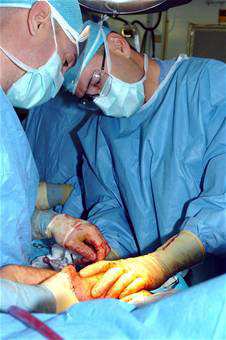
Air Force medics support trauma mission for warriors

Col. (Dr.) Elisha Powell and Col. (Dr.) Jack Ingari operate on a Soldier wounded in an improvised explosive device attack Dec. 12, 2005, at Joint Base Balad, Iraq. Both served as orthopedic surgeons in 2005 with the 332nd Expeditionary Medical Group at the Air Force Theater Hospital.